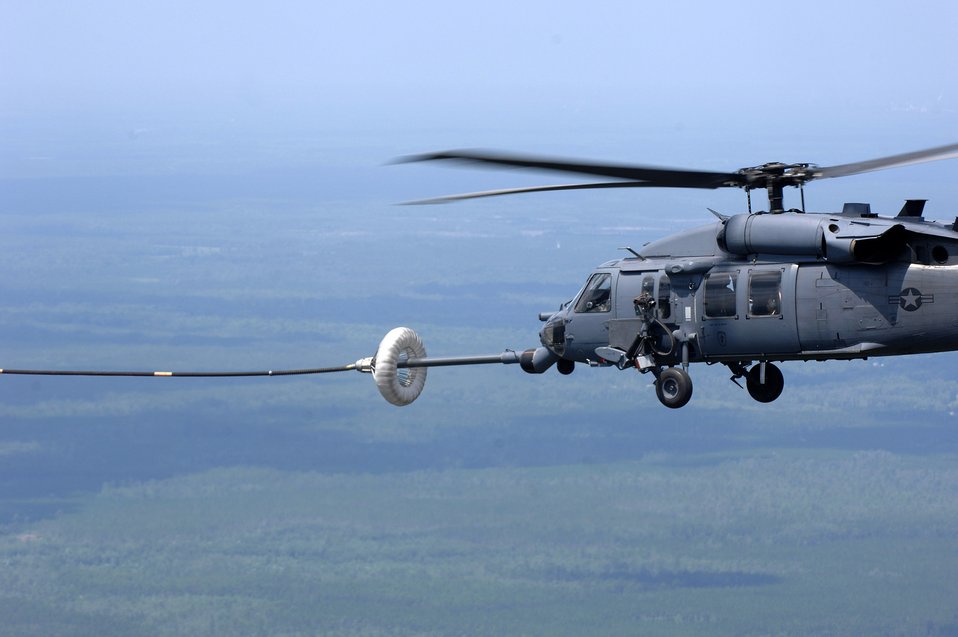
Doing something amazing

An HH-60 Pave Hawk is refueled June 27 while being filmed by a video production team for the Air Force recruiting campaign,